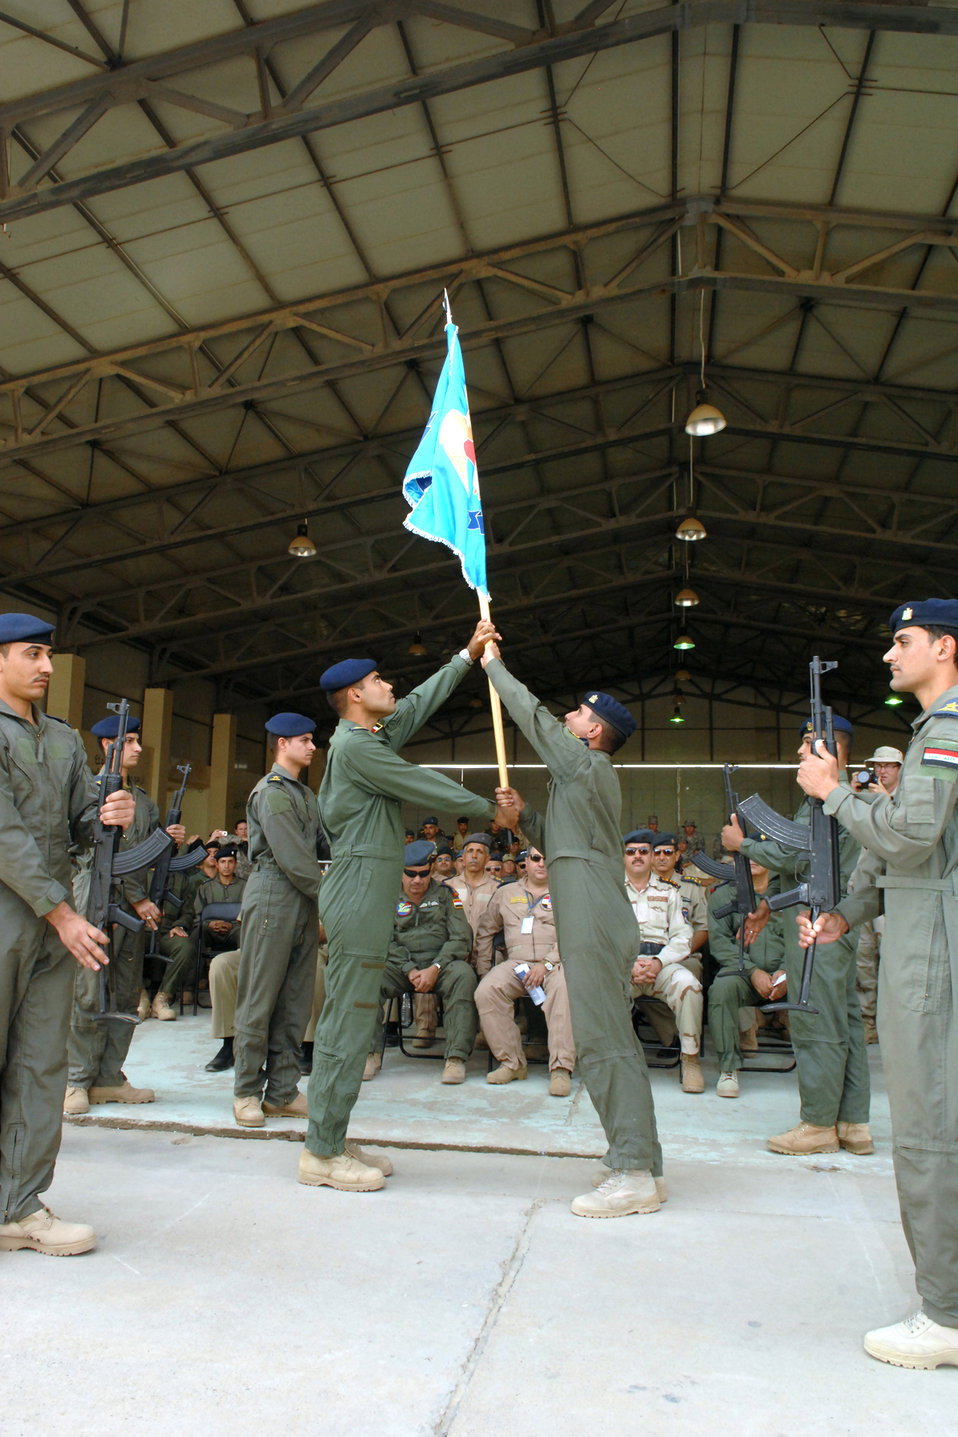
Iraqi air force pilots take flight into history

Iraqi airmen pass the class flag to the senior class during a graduation ceremony at Kirkuk Regional Air Base, Iraq, Oct. 13. Three Iraqi airmen received their wings during the ceremony.